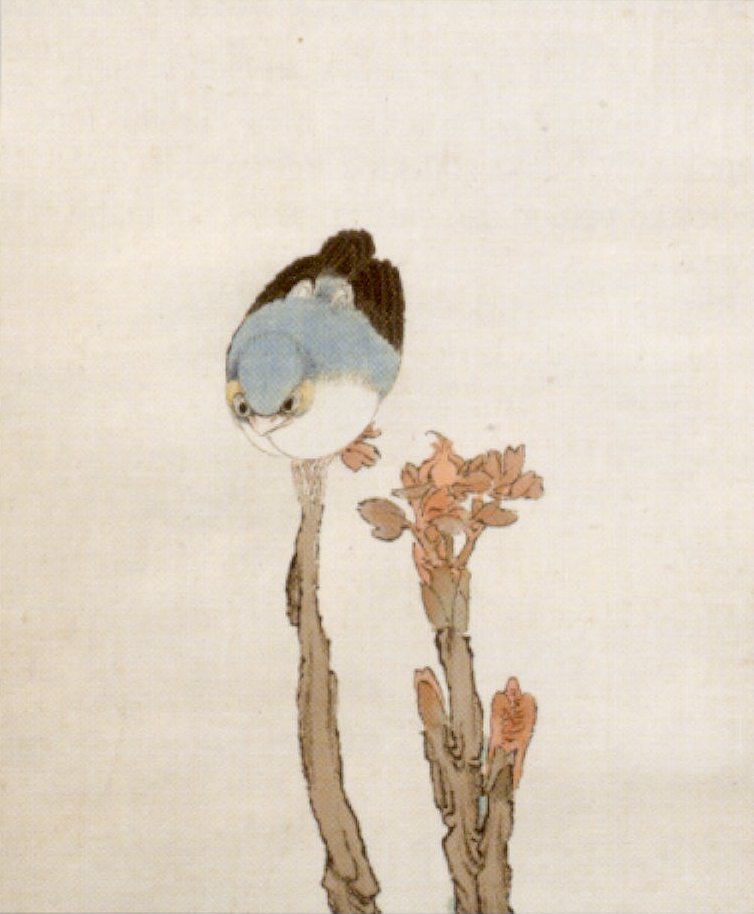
Bird on Branch (detail) by Ren Yu (1854-1901), dated 1870